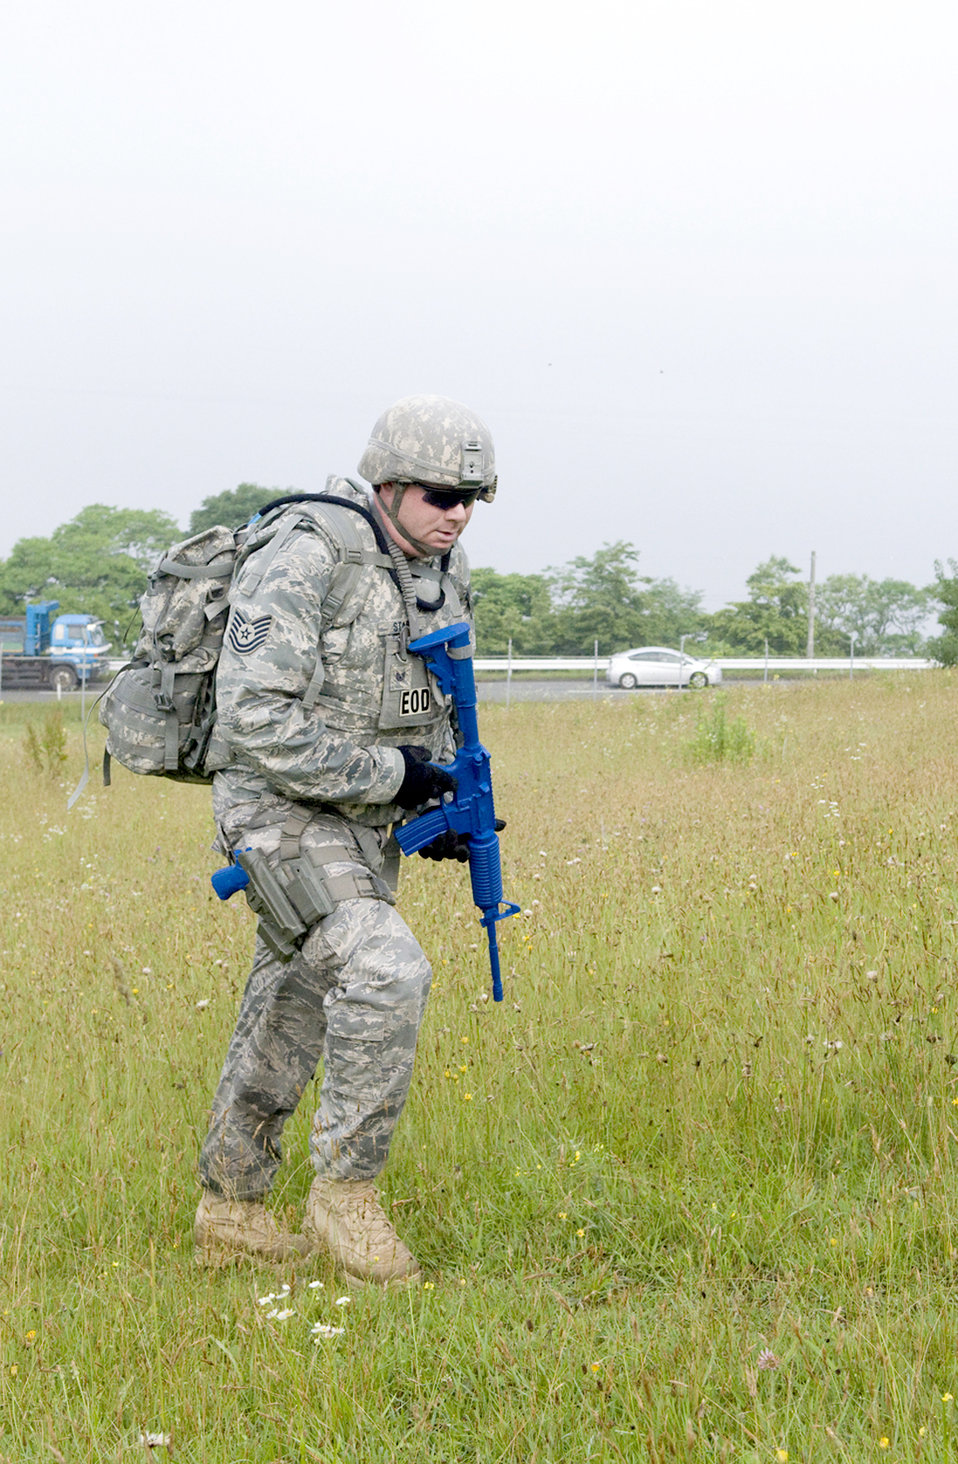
Blast radius: An EOD Airman's experience

Tech. Sgt. Rory Stark ascends a hill July 9, 2010, during a ruck march, at Misawa Air Base, Japan. The sergeant participates in bi-monthly marches and drills with fellow EOD flight technicians, which prepares them for dismounted-patrol support while deployed. Sergeant Stark is an explosive ordnance disposal technician assigned to the 35th Civil Engineer Squadron.